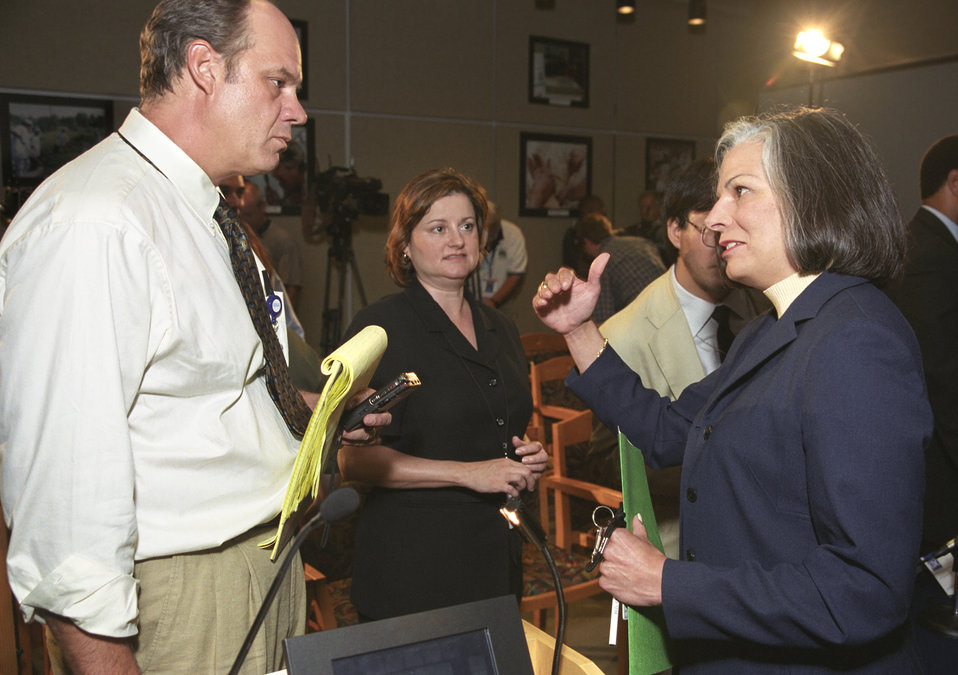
Former Director of the CDC (2002 - 2008), Julie Gerberding MD, MPH speaks with reporters during August's Bioterrorism Preparedness Press Briefing.